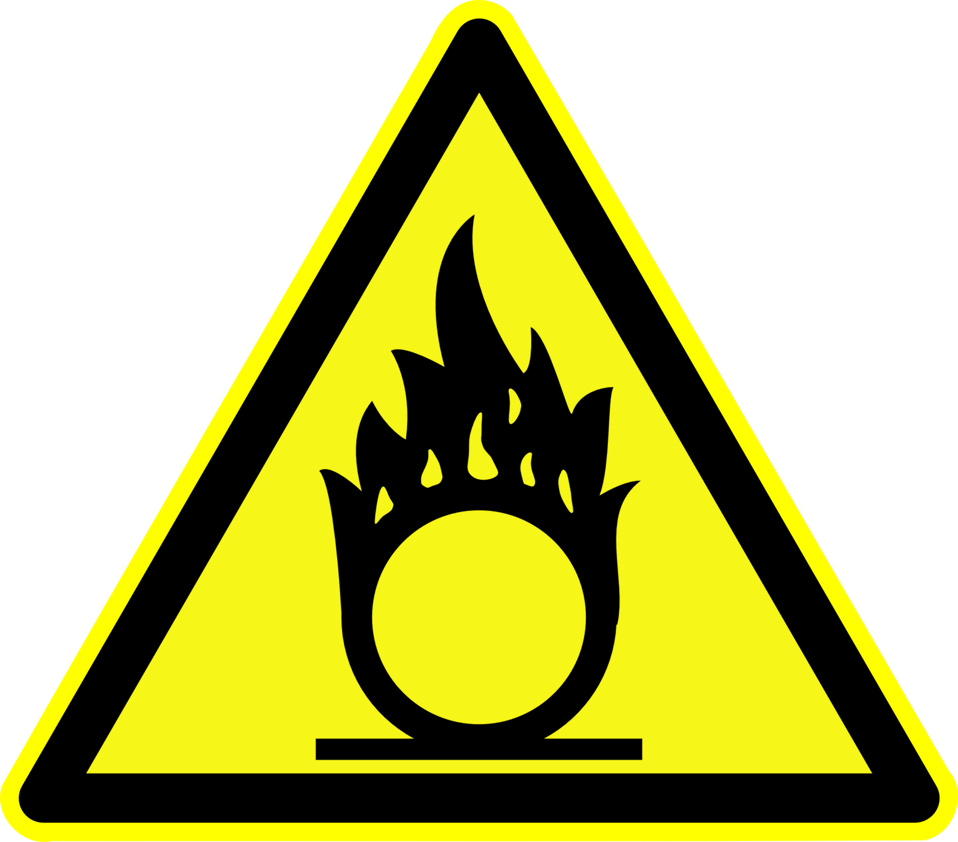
Deutsch: Warnung vor brandfördernden Stoffen, Warnzeichen D-W011 nach DIN 4844-2 Oxidising substances, warning sign D-W011 according to German standard DIN 4844-2